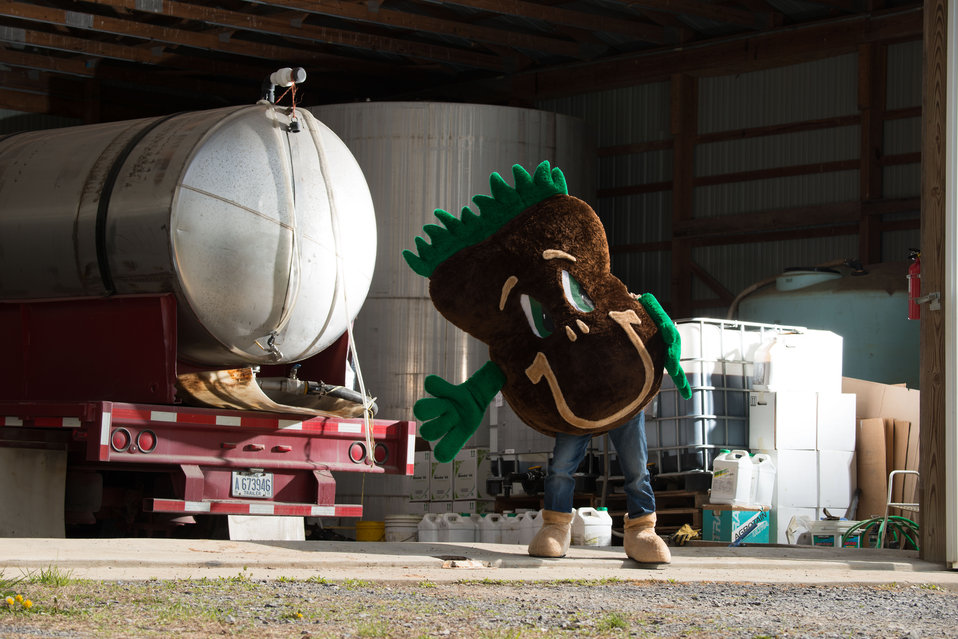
The U.S. Department of Agriculture’s (USDA) Natural Resources Conservation Service (NRCS) mascot Sammy Soil stands in front of the storage facility where agri-chemicals are safely stored on the Sunny Ridge Farm in Laytonsville, MD on Monday, Apr. 28, 2014. The Sunny Ridge Farm owned by the Stabler family uses a number of conservation practices to promote soil health and water quality. No-till cropping systems use cover crops that help water soak deep into the soil and machines work lightly on top of the soil preserving vertical pores that are water’s pipeline to the roots. Cover crops prevent erosion, improve soil health, hold water, supply nutrients, and suppress weeds and pests. Fenced waterways keep livestock away from the streams and drainage to low points of fields, which allows grass, trees and other vegetation to grow. The plants take up nutrients from the livestock effluent, reducing pollution to waterways. The farm also has a well-designed agrichemical facility for an environmentally safe area to handle and store tanks of on-farm chemicals.